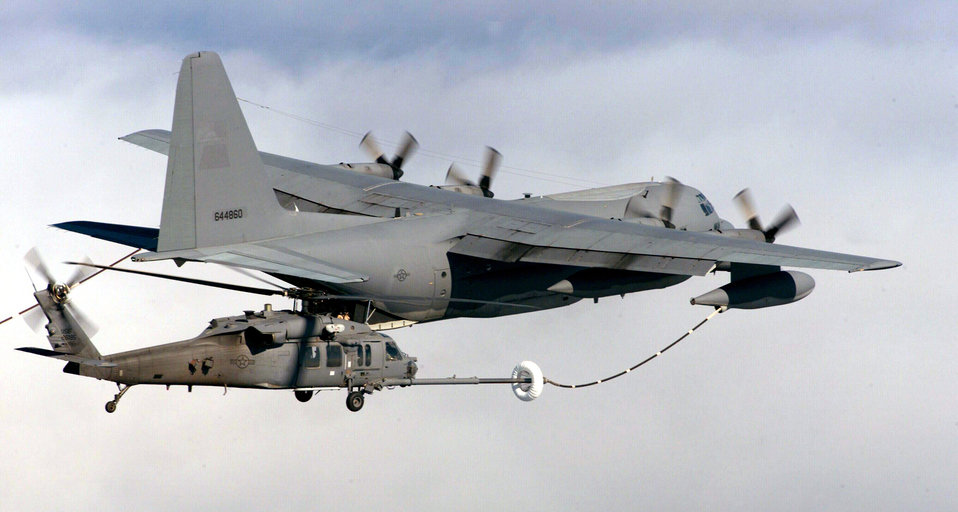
Got gas?

OVER SAN DIEGO, Calif. - An HH-60 Pave Hawk from the 55th Rescue Squadron moves in to refuel from a 79th Rescue Squadron's C-130. The refueling was part of a water rescue training exercise conducted jointly between the 55th, 79th, and 48th Rescue Squadrons, all a part of the Air Force search and rescue operations mission at Davis-Monthan Air Force Base, Ariz.